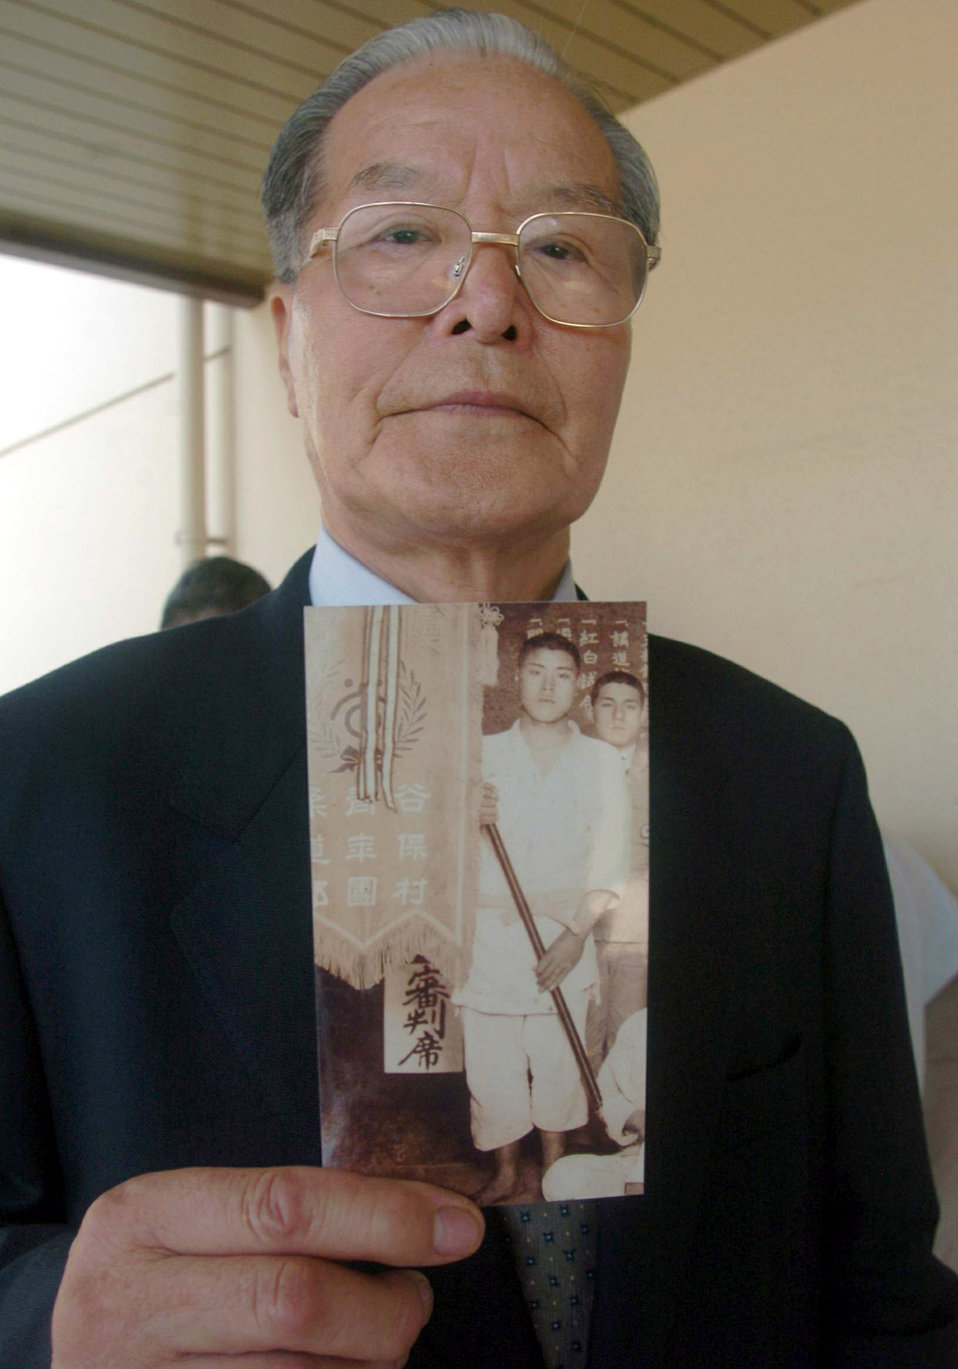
Honoring the past

YOKOTA AIR BASE, Japan -- Manshichi Saeki holds a picture of his older brother, Ippei, a Japanese soldier who died fighting against American forces during World War II. A Japanese flag signed and given to the warrior by his friends and relatives before he died was presented to Mr. Saeki during a ceremony here Aug. 6.